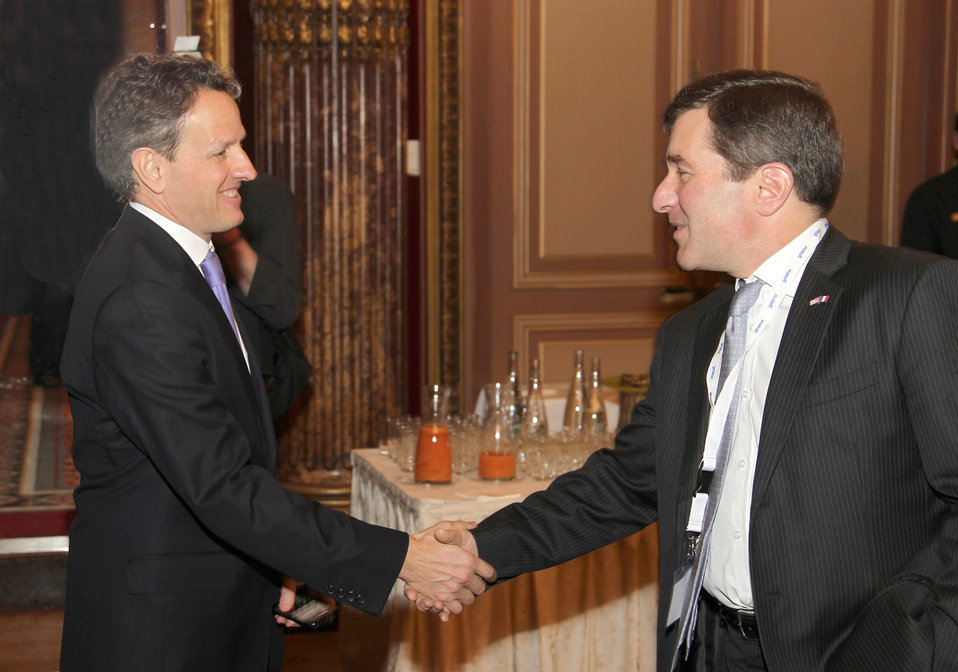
G-20 Meeting of Finance Ministers and Central Bank Governors in Paris, 02/18/011

Secretary Geithner and U.S. Ambassador to France Charles Rivkin meet at 'The Eurofi G-20 High Level Seminar 2011.”